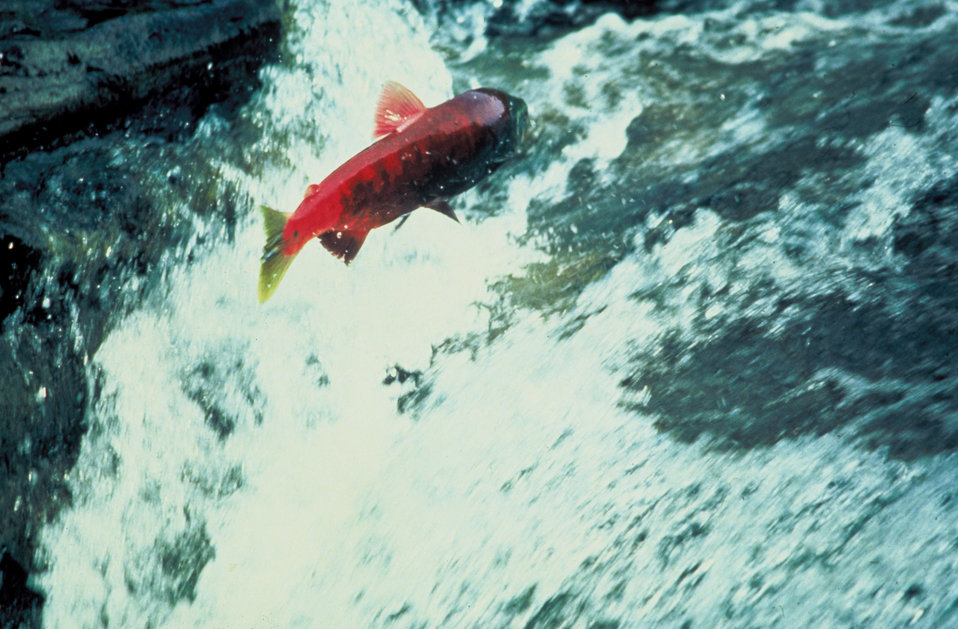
Salmon 2

Alaskan salmon.